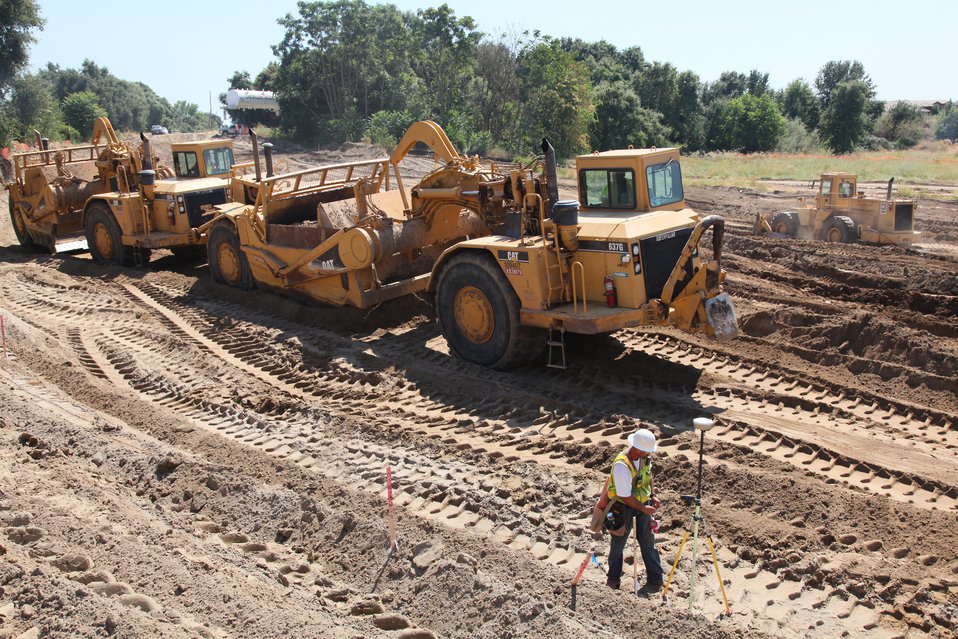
West Sacramento setback levee construction

Crews construct the new setback levee Sept. 7 along South River Road in West Sacramento as part of a joint effort between the U.S. Army Corps of Engineers and the Central Valley Flood Protection Board to upgrade levees along the Sacramento River and its tributaries.